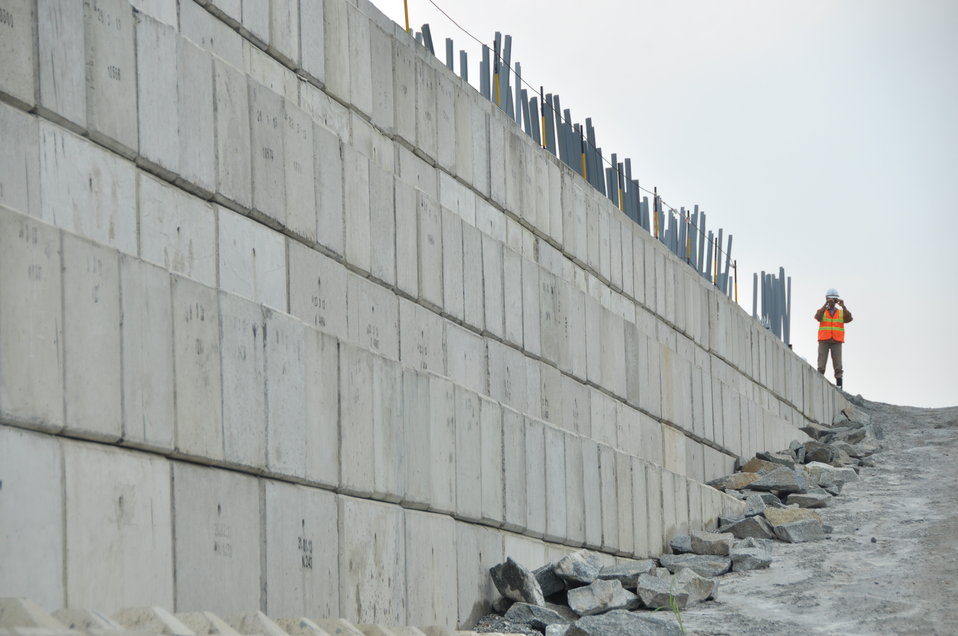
USAID Dioxin Contamination Project Progress: Containment Structure

Progress at the Environmental Remediation of Dioxin Contamination Project at the Danang Airport

December 4, 2013